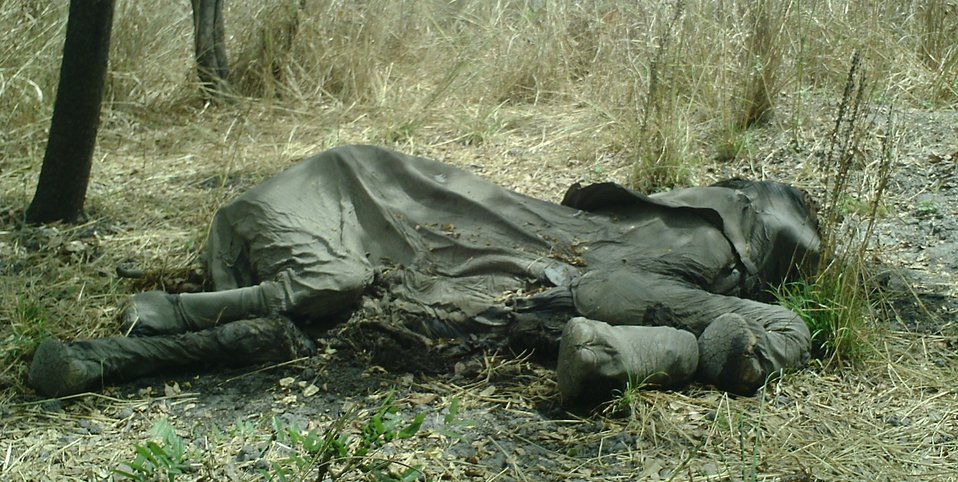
Bouba Njida

Bouba Ndjida in Cameroon, location of elephant slaughter. Poached elephant carcass.